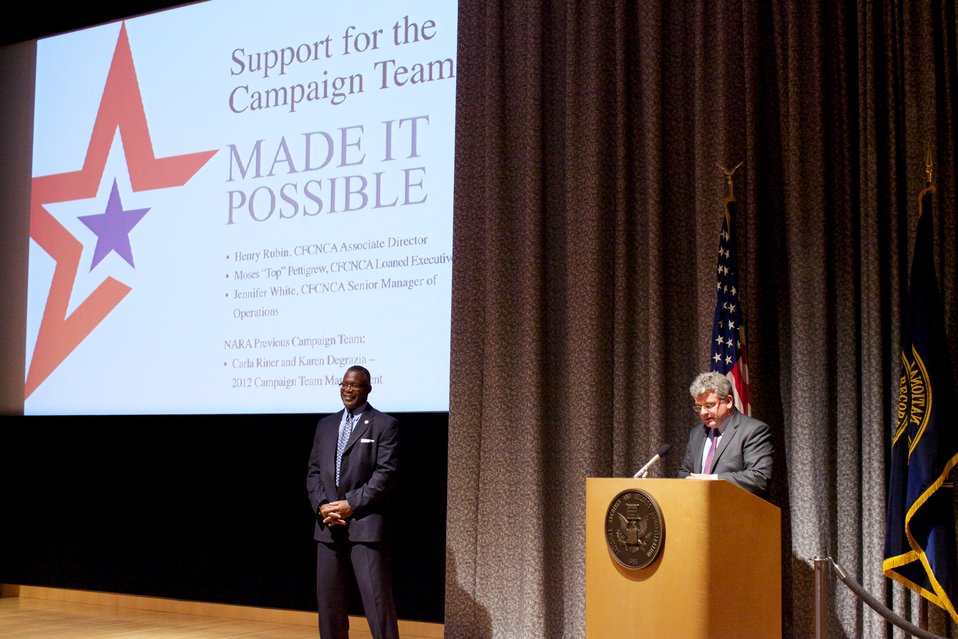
CFC Recognition Event